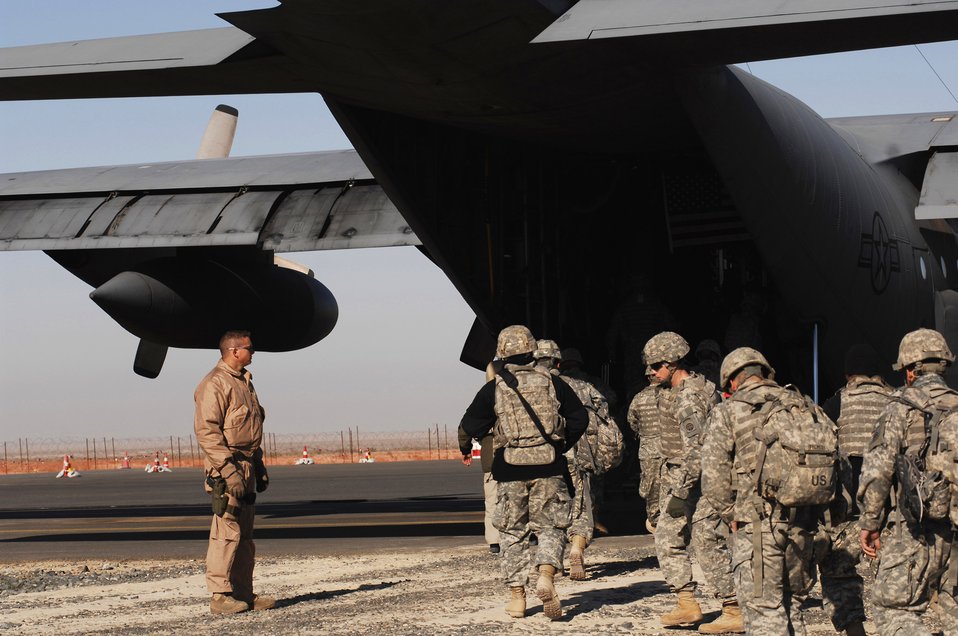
Airmen take Soldiers to the battlefield

Soldiers board an Air Force C-130 Hercules as Senior Airman Kenny Harmon watches Feb. 4 at a Southwest Asia air base. Airman Harmon, a 737th Expeditionary Airlift Squadron C-130 loadmaster, ensures the safety of boarding passengers being transported throughout the area of responsibility in support of operations Enduring Freedom and Iraqi Freedom.